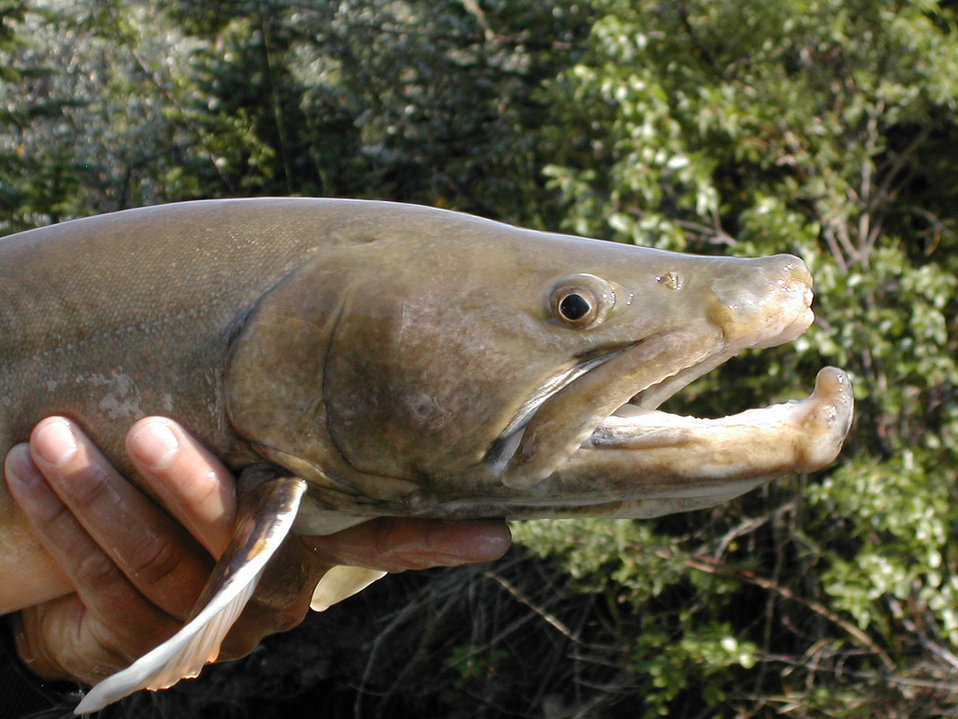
Big Bull Trout

Bull trout, a threatened species, gets the attention of Montana Fish and Wildlife Conservation Office scientists, particularly on the Blackfeet Reservation.